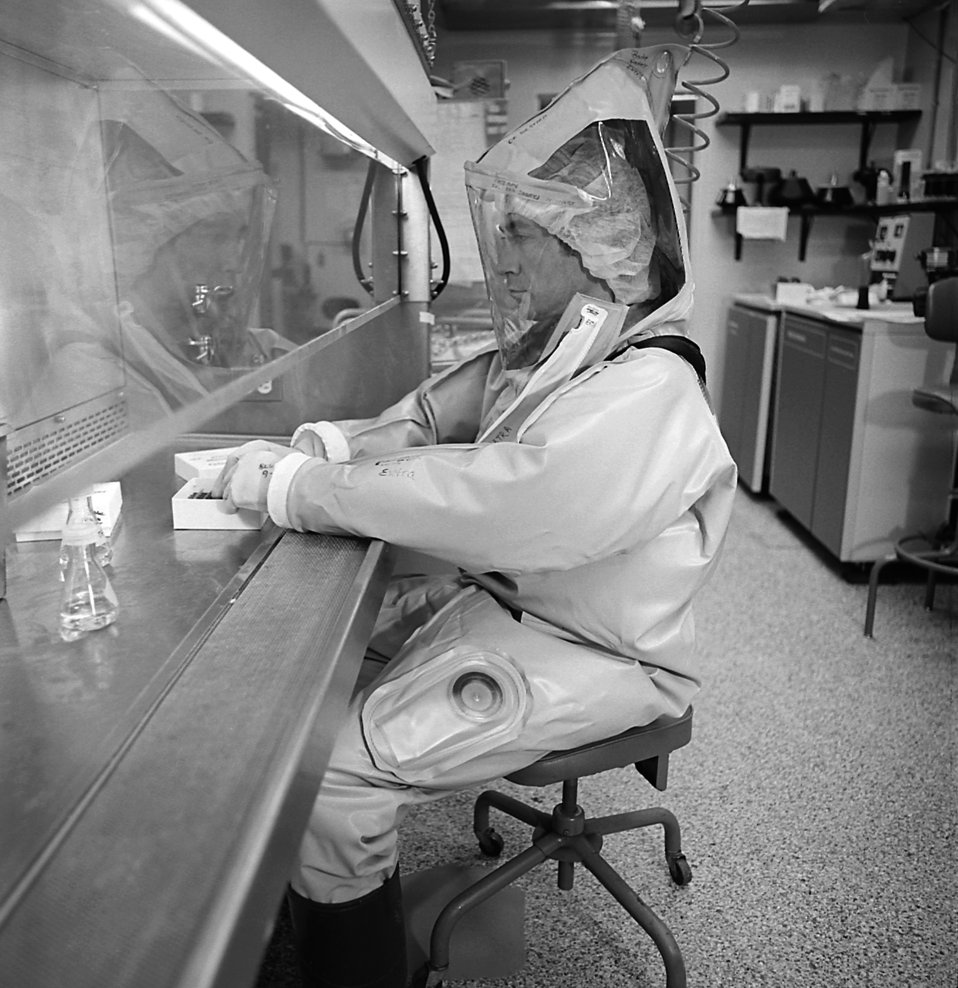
Here a CDC scientist conducts laboratory research in the Biosafety Level 4 laboratory, Atlanta, GA.